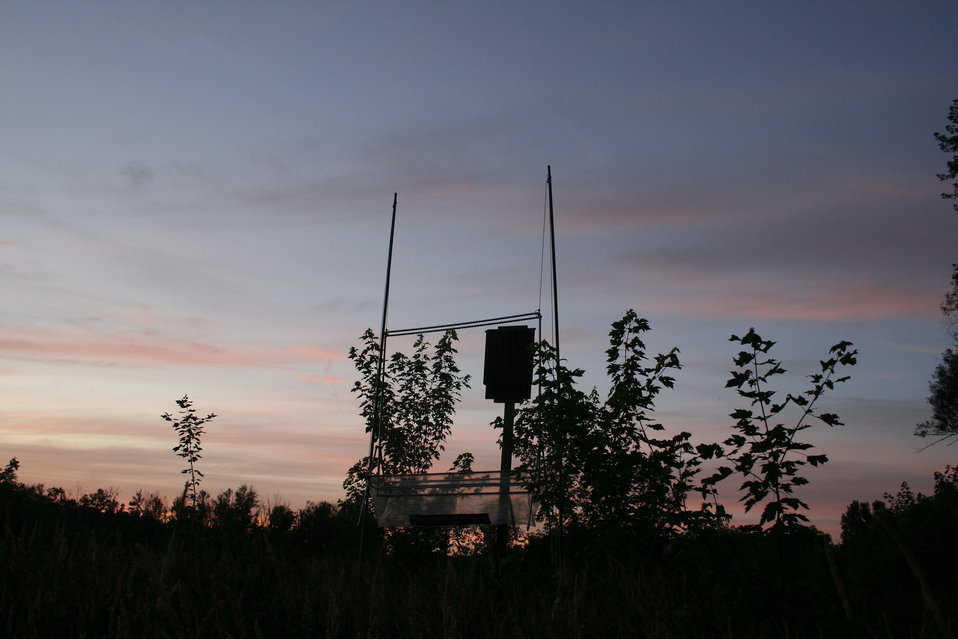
Harp trap and bat house

Biologists use a harp trap to capture bats exiting the bat house